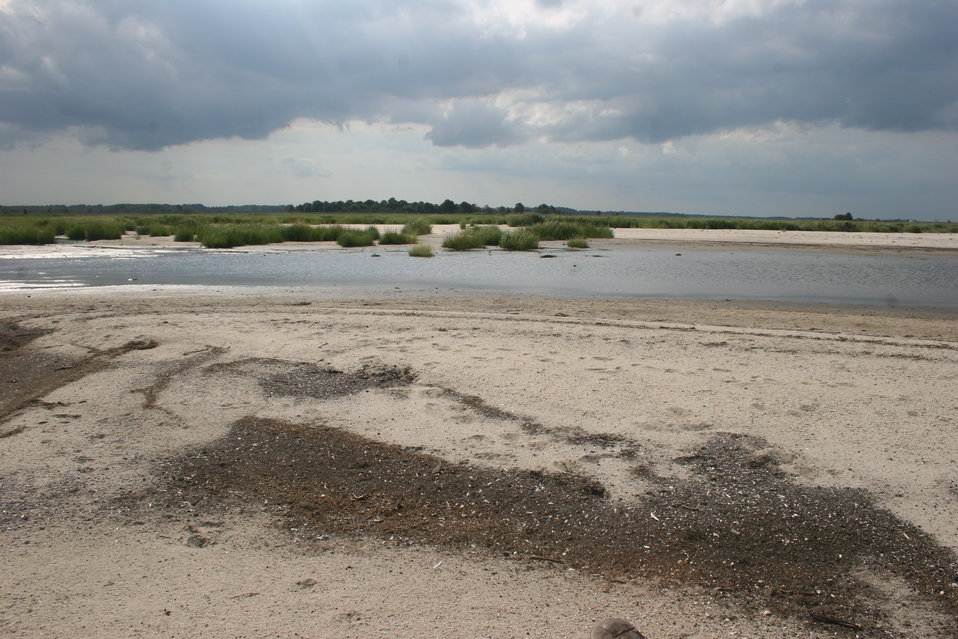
Salt Marsh at Prime Hook NWR